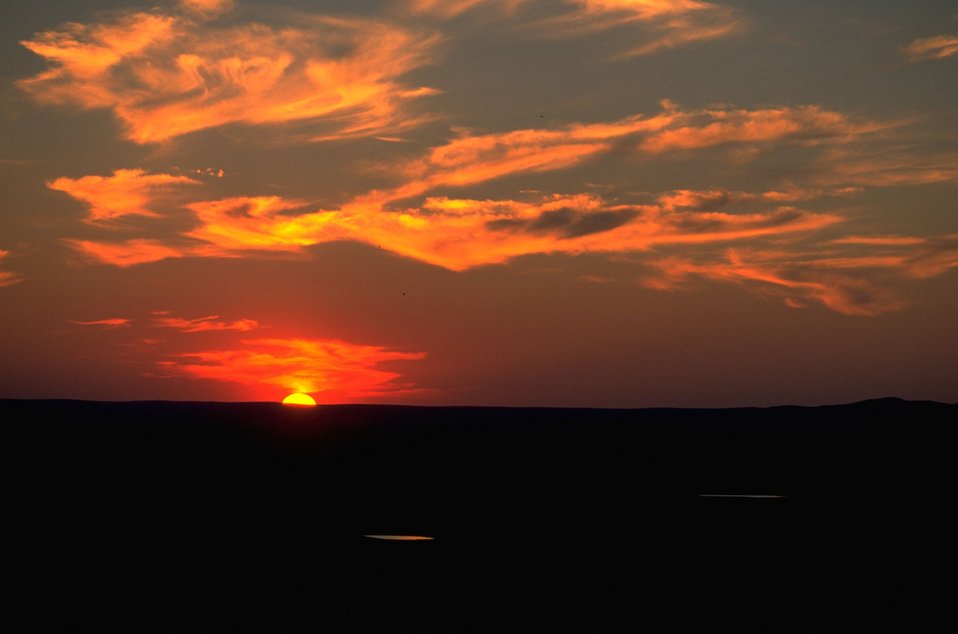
Sunset 35 miles north of Belle Fourche on Porcupine Creek Allotment